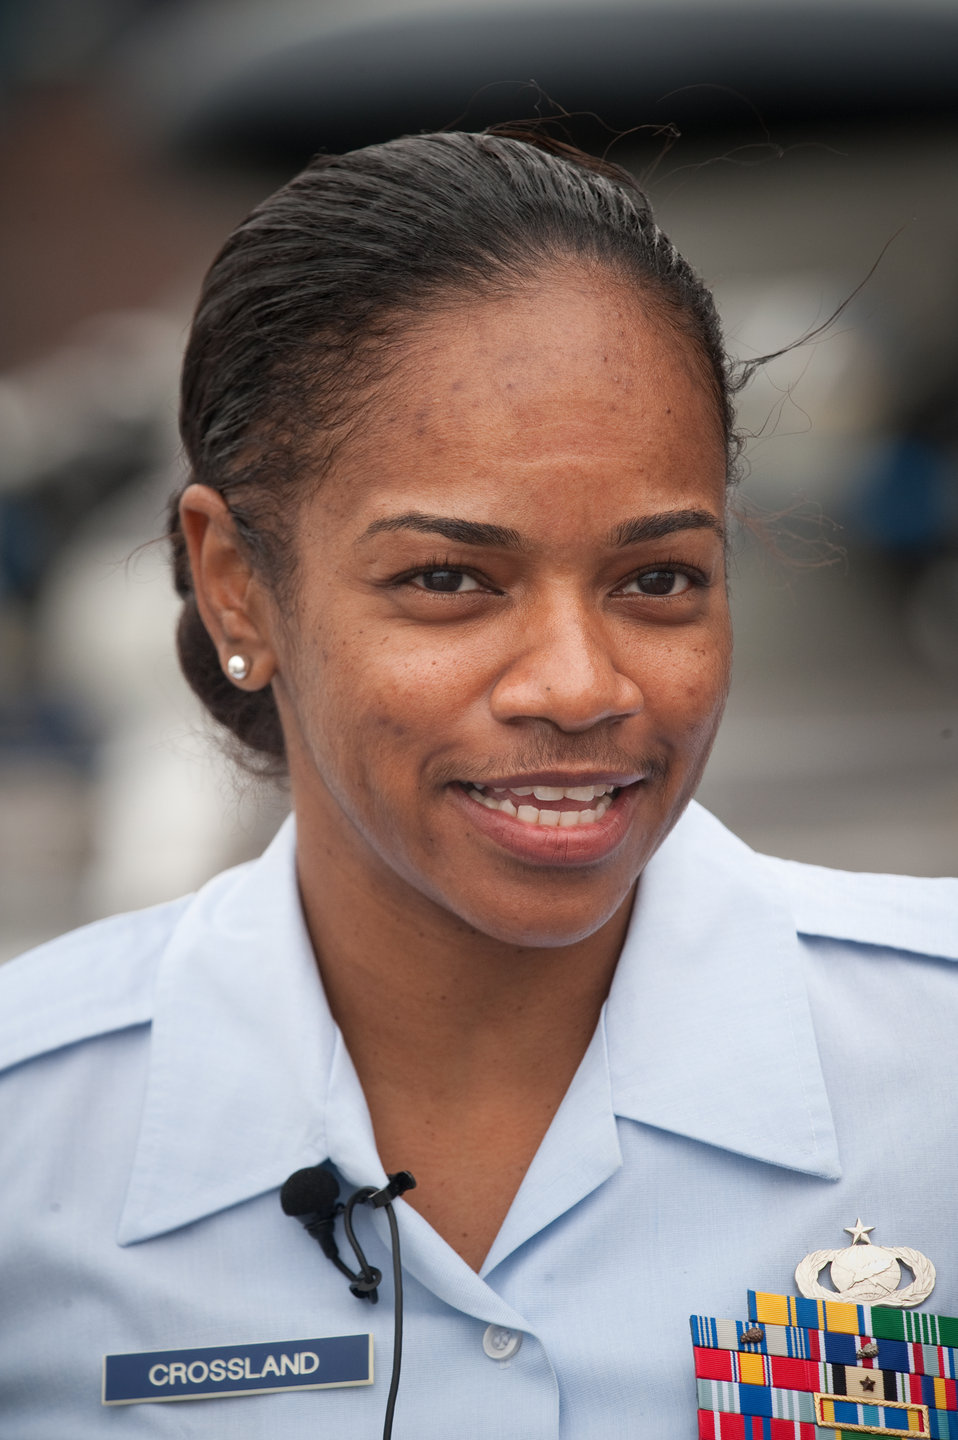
Air Force Week New York City Proclamation Ceremony

Staff Sgt. Mercedes Crossland,during the Air Force Week New York City proclamation ceremony at the USS Intrepid on Aug. 24, 2010. Sgt. Crossland is Public Affairs photographer stationed at Aviano Air Base, Italy, and a native of Harlem. The event at the Intrepid Sea, Air & Space Museum was highlighted by a six-ship flyover by the USAF Thunderbirds. The Honorable Michael Donley, Secretary of the Air Force attended, along with General Raymond Johns, Commander of Air Mobility Command. The Police Commissioner of the City of New York, the Honorable Raymond Kelly, represented NYC. Mr. Greg Kelly of